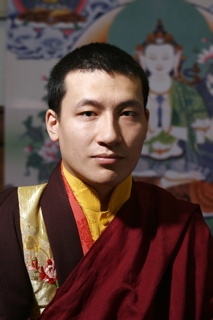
Thaye Dorje, one of the two claimants of the title 17th Karmapa see Karmapa controversy. Picture taken in London.